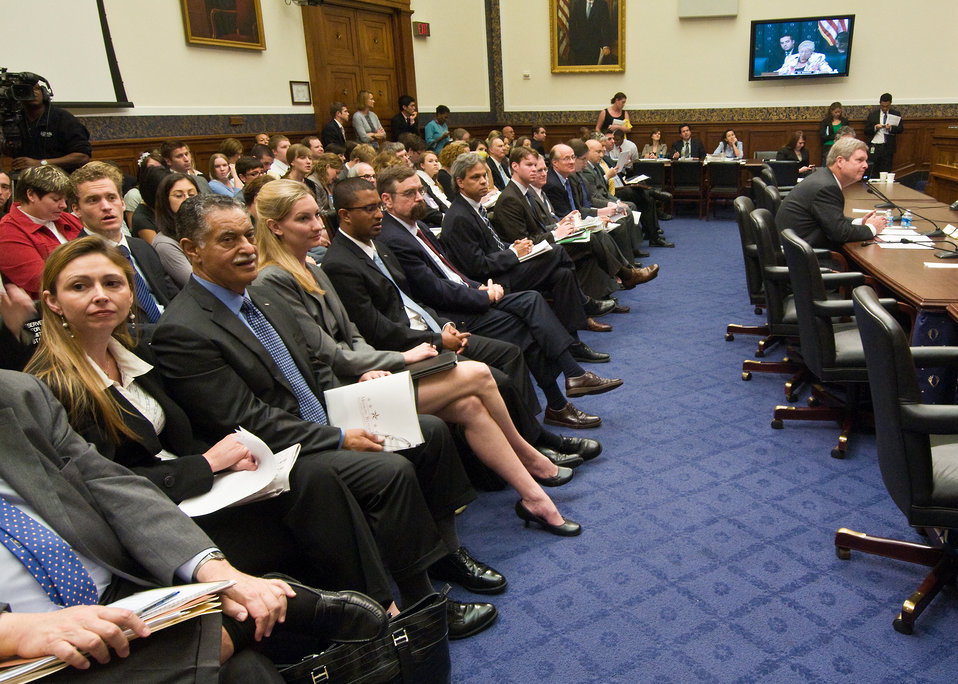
Agriculture Secretary Tom Vilsack attended a hearing of the House Committee on Education and Labor on “H.R.5504, Improving Nutrition for America’s Children Act,” in the Rayburn House Office Building in Washington, D.C., Thursday, July 1, 2010. Secretary Vilsack spoke of the importance of nutrition to National security, military preparedness and education.USDA Photo 10di1427-37.